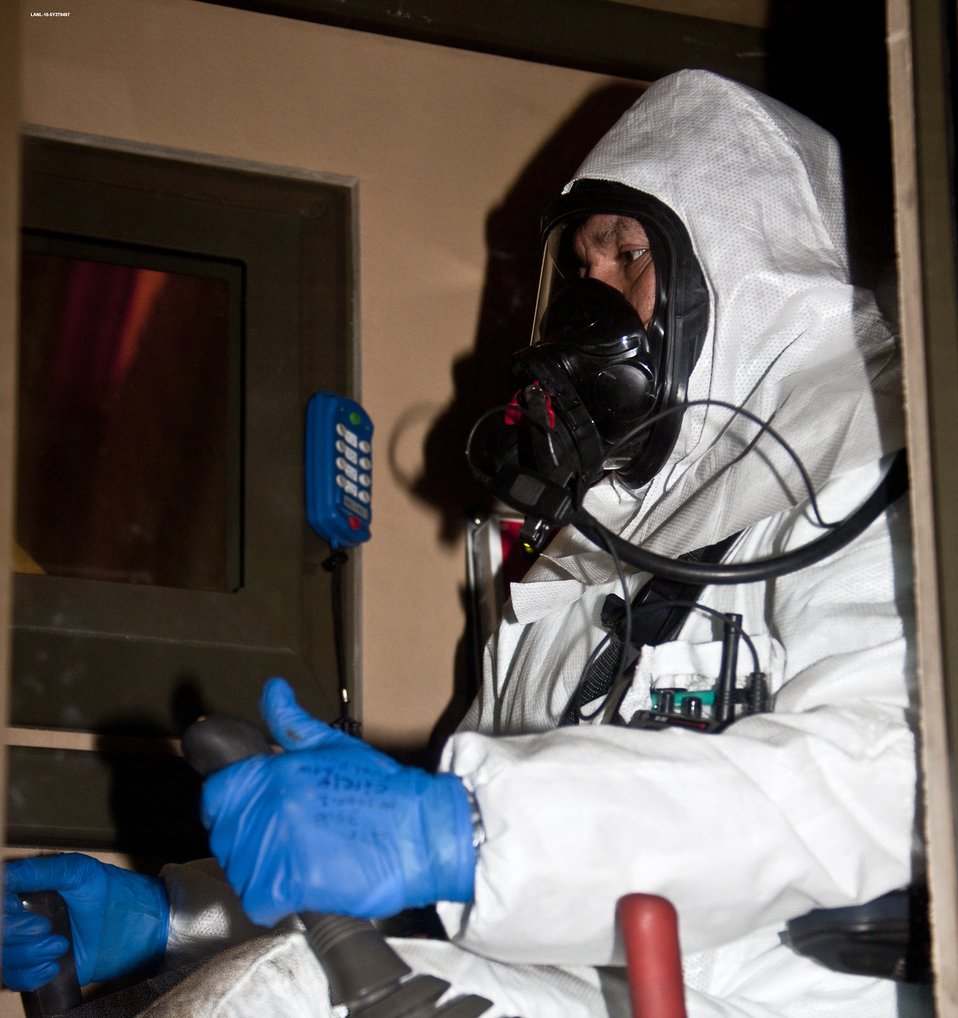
In Recovery Act Cleanup of WWII Waste Site, Safety Means Preparing for the Unexpected

To ensure safety, workers wear full personal protective equipment inside the enclosures.